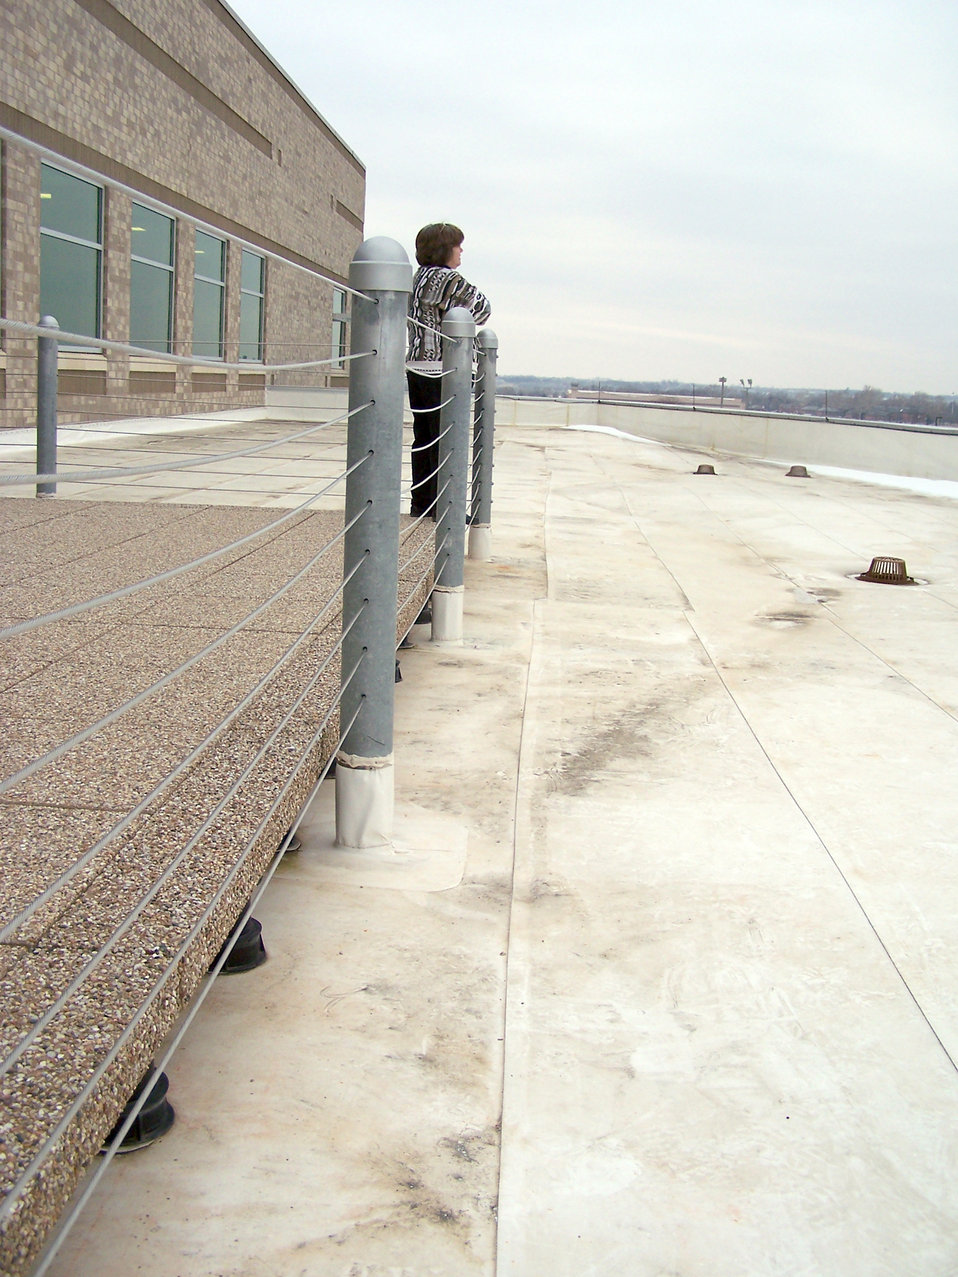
Green Roof

An employee takes a break on the rooftop observation deck of the Air Force Weather Agency headquarters building at Offutt Air Force Base, Neb. The building's roof features cool-roof technology to lower the temperature on the roof, which saves energy that is related to conditioning the air inside the building. The building was one of Air Combat Command's first Leadership in Energy and Environmental Design green-rated facilities.